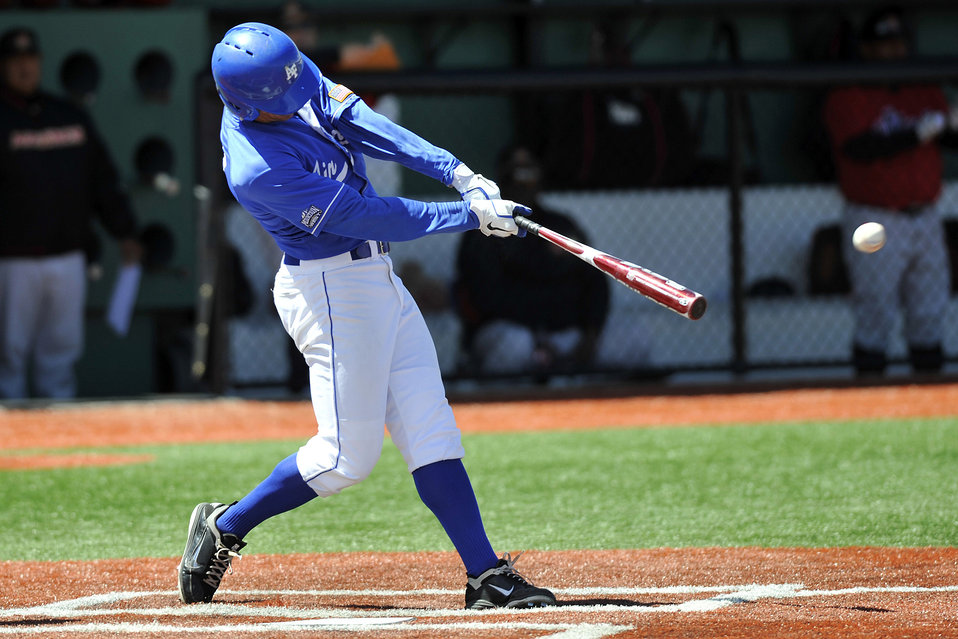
Falcons vs. Aztecs

Sophomore Alex Bast hits one to deep left field during a match against San Diego State April 22, 2011, at Falcon Field in Colorado Springs, Colo. The Falcons defeated the Aztecs 7-3. The win was the first for the Falcons against the Aztecs in 35 contests dating back to 2003.